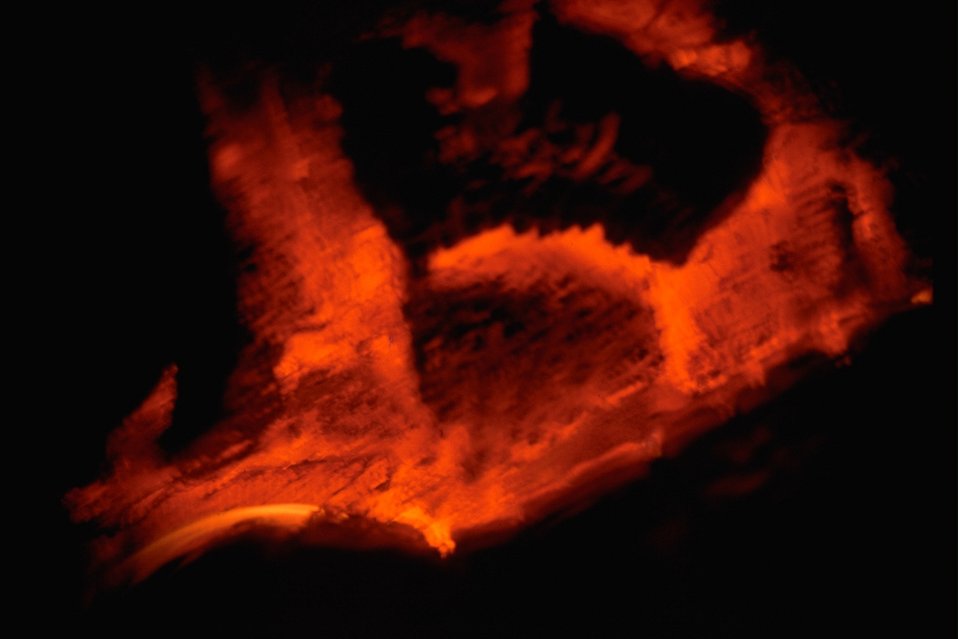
Fire Clouds.